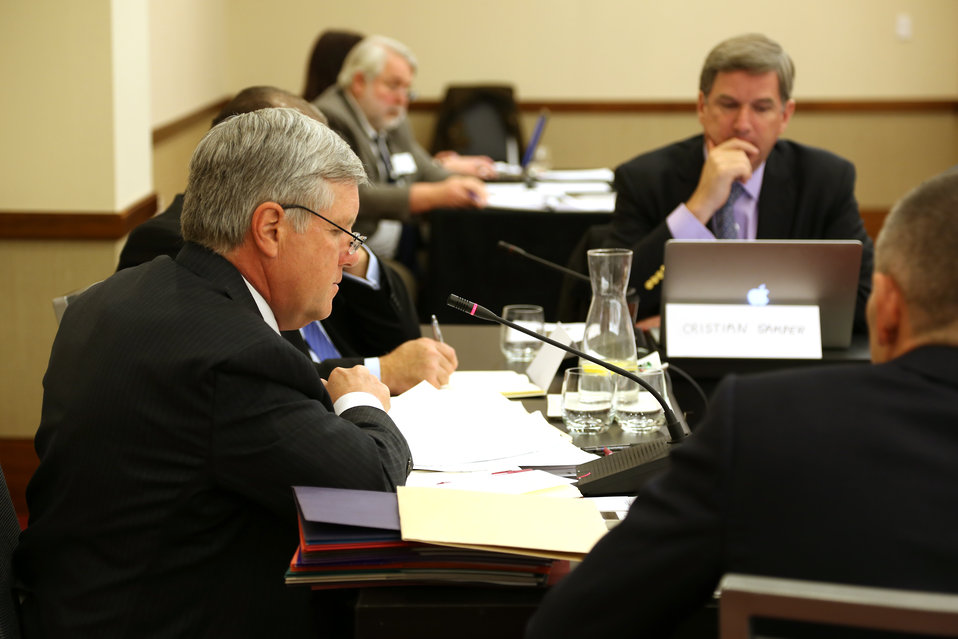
Wildlife Trafficking Advisory Council Meeting March 20, 2014